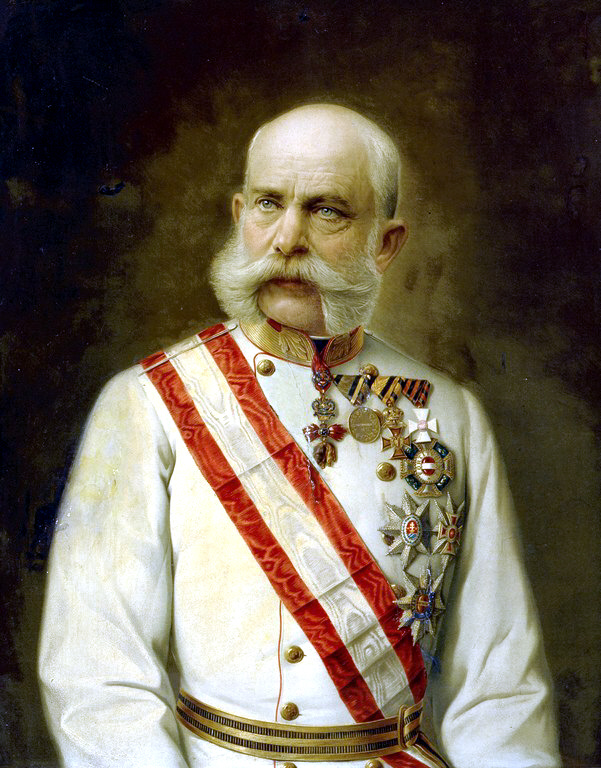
Deutsch: Kaiser Franz Joseph, um 1910, Ölgemälde; Bundesmobilienverwaltung